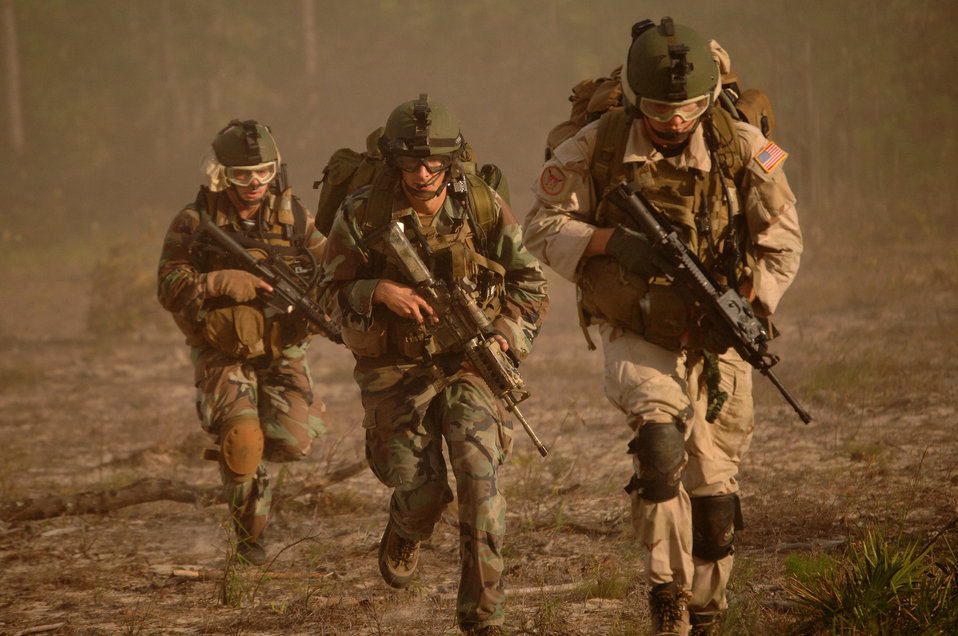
Combat search and rescue training

Combat control and pararescue trainees from the 720th Operations Support Squadron Advanced Skils Training flight at Hurlburt Field, Fla., run to their rally point after off-loading a helicopter Sept. 7, 2007. The special tactics Airmen were conducting a combat search and rescue training scenario on the Eglin Air Force Base range. AST is the last phase of training for combat controllers before they report to operations special tactics squadrons.